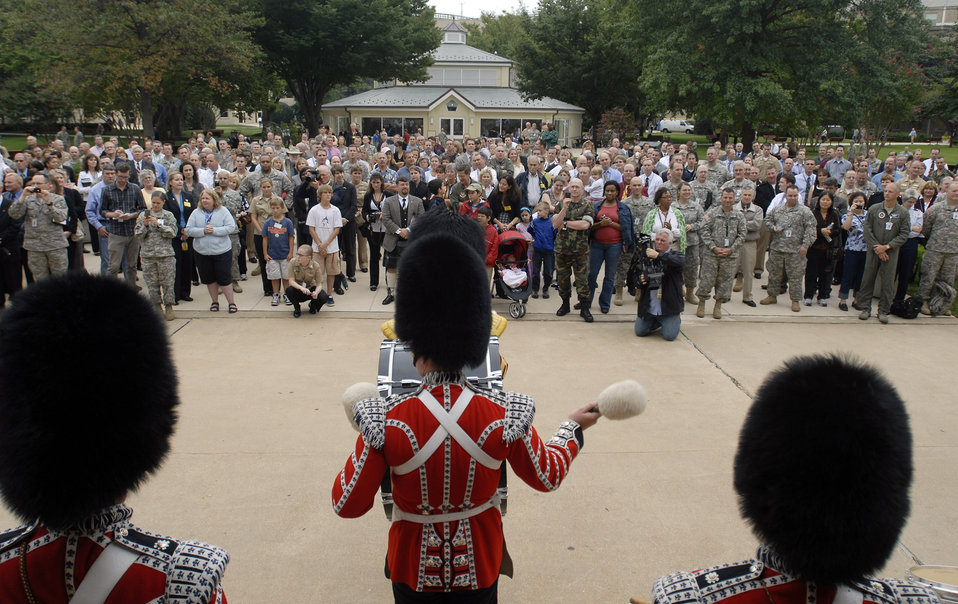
British band performs in Pentagon courtyard

The British Army Pipes and Drums of the 1st Battalion Scots Guard performs for employees, servicemembers and families Sept. 25, 2009, at the Pentagon. The band that consists of infantry soldiers performed for its closet allies prior to a Helmand Province deployment next spring.